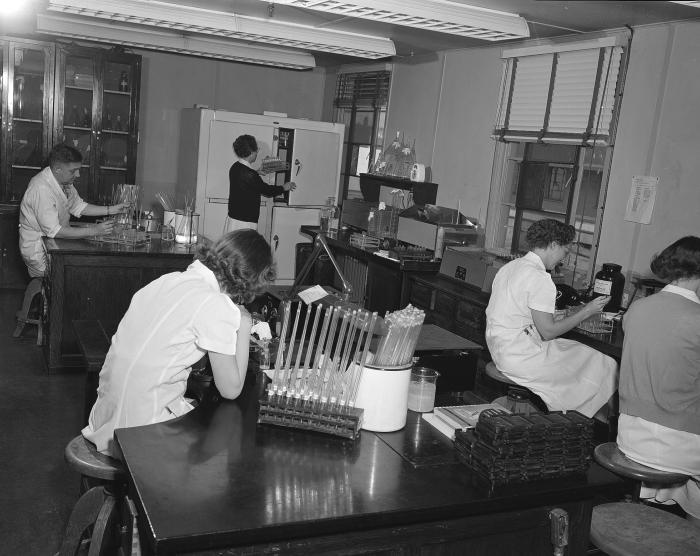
This historic 1953 image depicted Al Harris and his laboratory assistants as they were at work in the venereal disease lab.